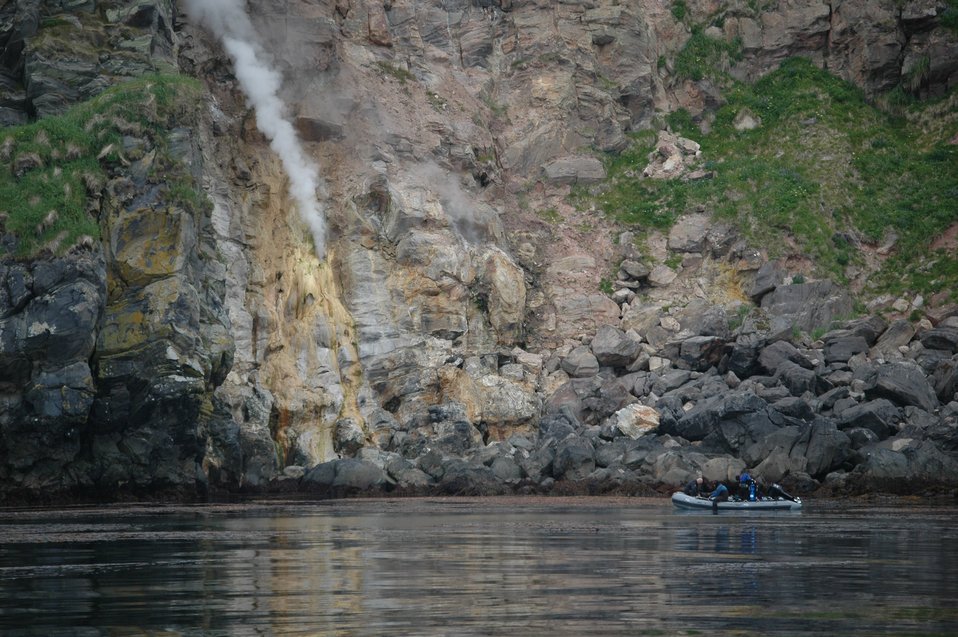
Fumarole - a manifestation of geothermal energy